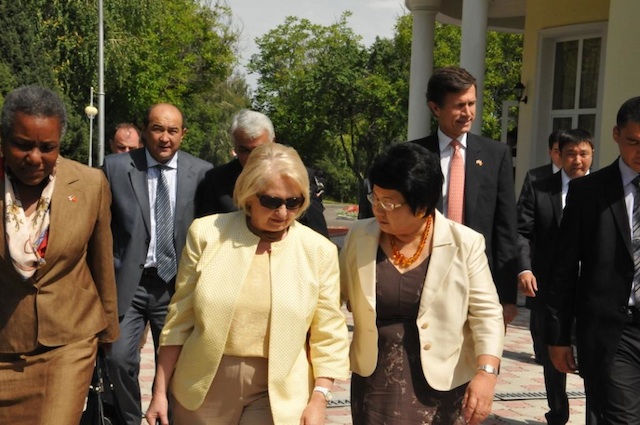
Ambassador Verveer Speaks With Kyrgyz Republic President Otunbayeva

U.S. Ambassador-at-Large for Global Women’s Issues Melanne Verveer, center, speaks with Kyrgyz Republic President Roza Otunbayeva, right, on their way to a meeting on women's empowerment and economic development in Central Asia in Bishkek, Kyrgyzstan, on July 18, 2011.